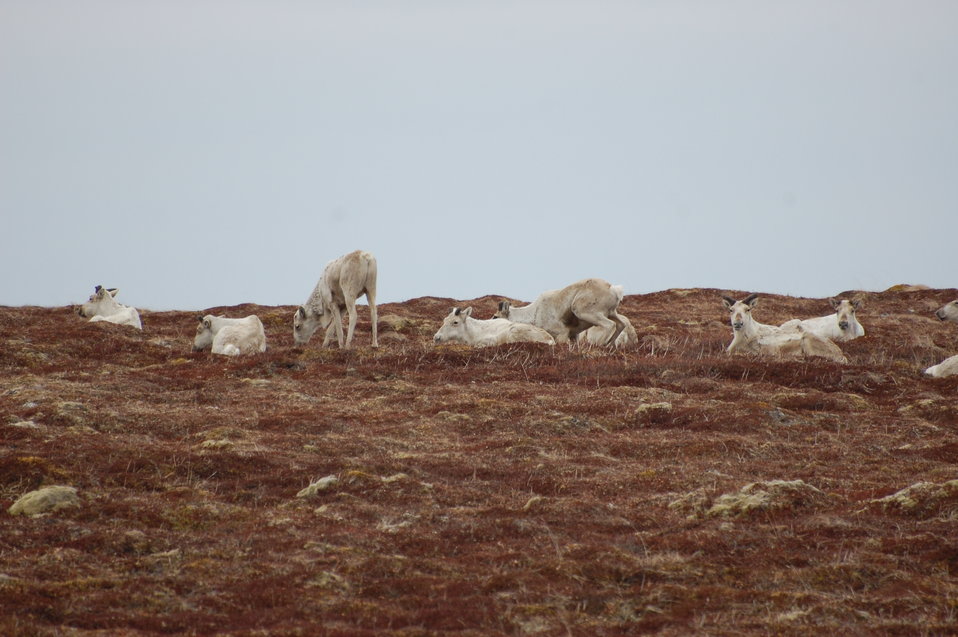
Caribou

Izembek National Wildlife Refuge